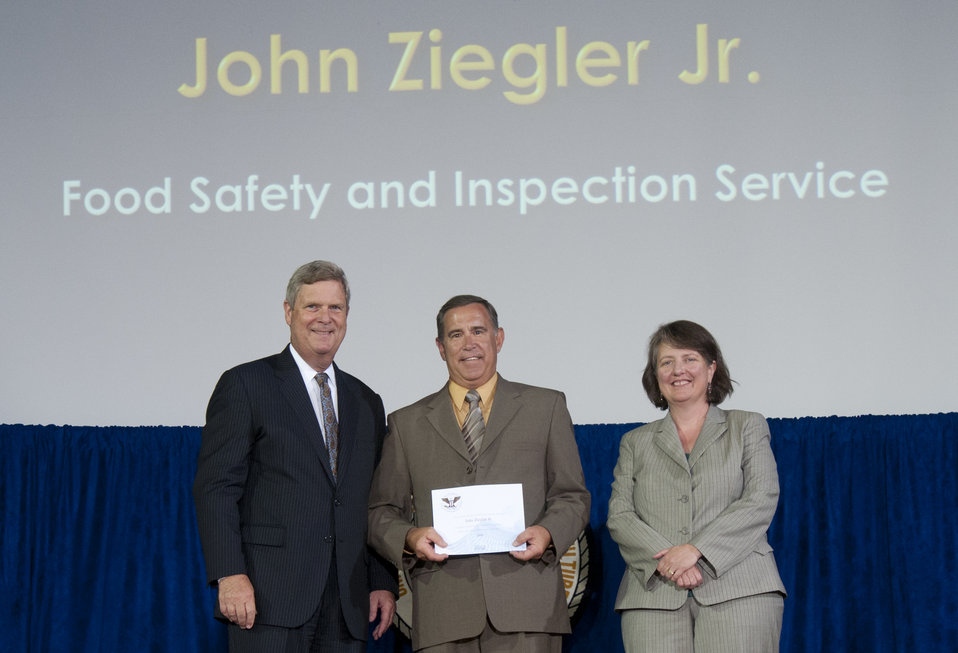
Agriculture Secretary Tom Vilsack and Agriculture Deputy Secretary Kathleen Merrigan present the President’s Call to Service Award to Food Safety and Inspection Service (FSIS) employee John Ziegler, Jr. at the U.S. Department of Agriculture (USDA) 64th Annual Honor Awards Ceremony in Washington, D.C. on Wednesday, Sept. 12, 2012. The Gold Presidential Volunteer Service Award is presented to the employee who has served 500 hours or more of service with a qualifying organization over the 12-month period beginning July 1, 2010, and ending June 30, 2011.